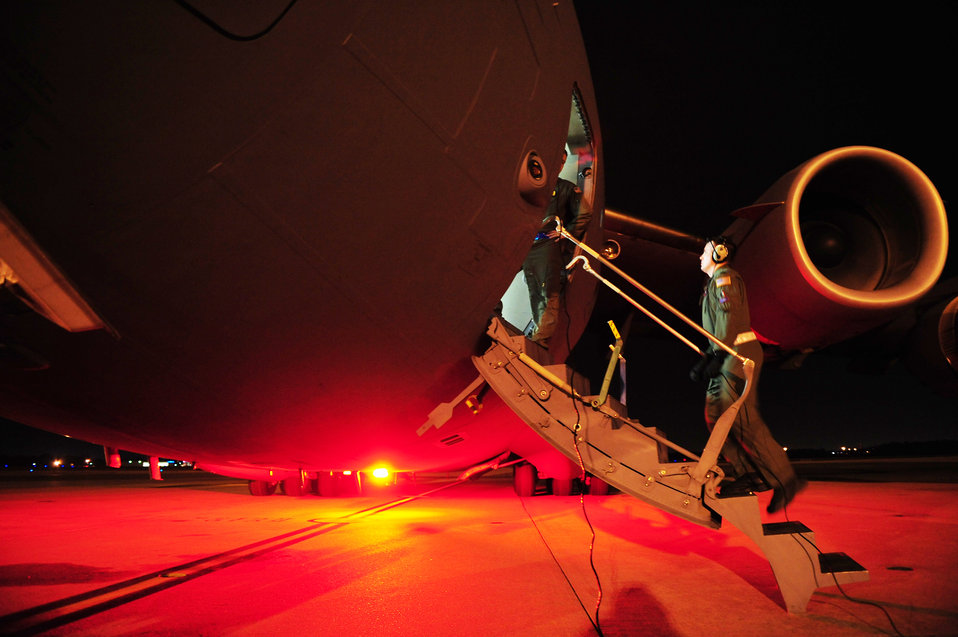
Meals, water delivered for Haiti relief

At Charleston Air Force Base, S.C., 1st Lt. David Redwine boards a C-17 Globemaster III before launching an air delivery mission in support of Operation Unified Response Jan. 20, 2010. The mission was the second air delivery flown to Haiti since relief operations began. Lieutenant Redwing is a pilot assigned to the 15th Airlift Squadron at Charleston AFB.